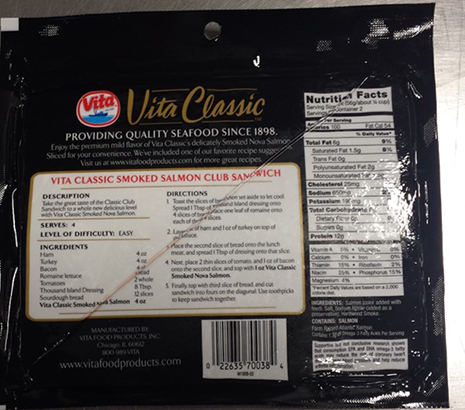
RECALLED – Premium Sliced Smoked Atlantic Salmon

June 16, 2014 – Product Recall – Vita Food Products Issues Voluntary Recall of 4oz Vita Classic Premium Sliced Smoked Atlantic Salmon Due to Possible Health Risk.